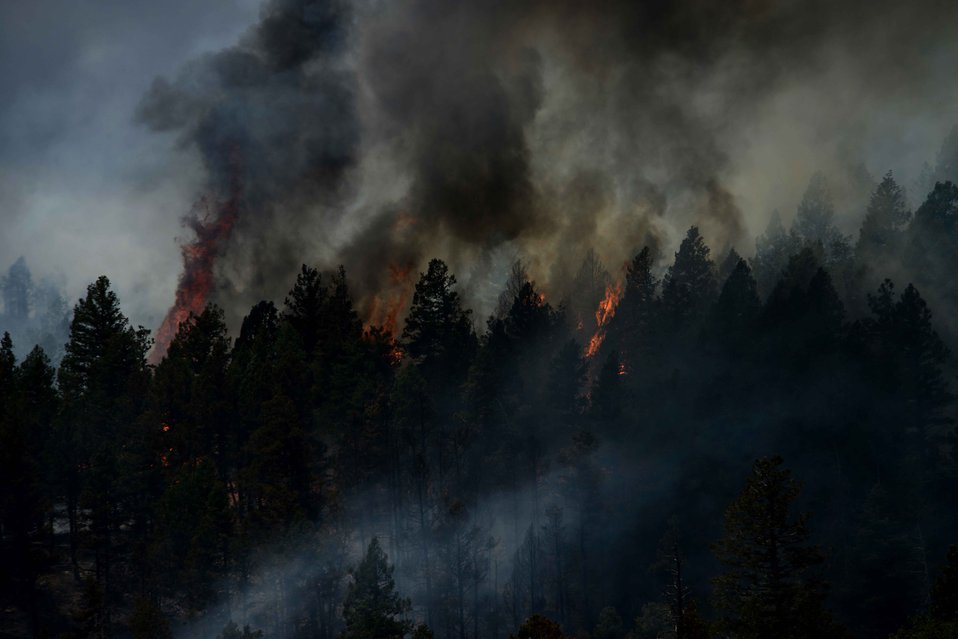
Waldo Canyon fires

Fire still burns in the Mount Saint Francois area of Colorado Springs, Colo., while firefighters continue to battle several blazes in Waldo Canyon on June 28, 2012. The Waldo Canyon fire has grown to 18,500 acres and burned more than 300 homes.